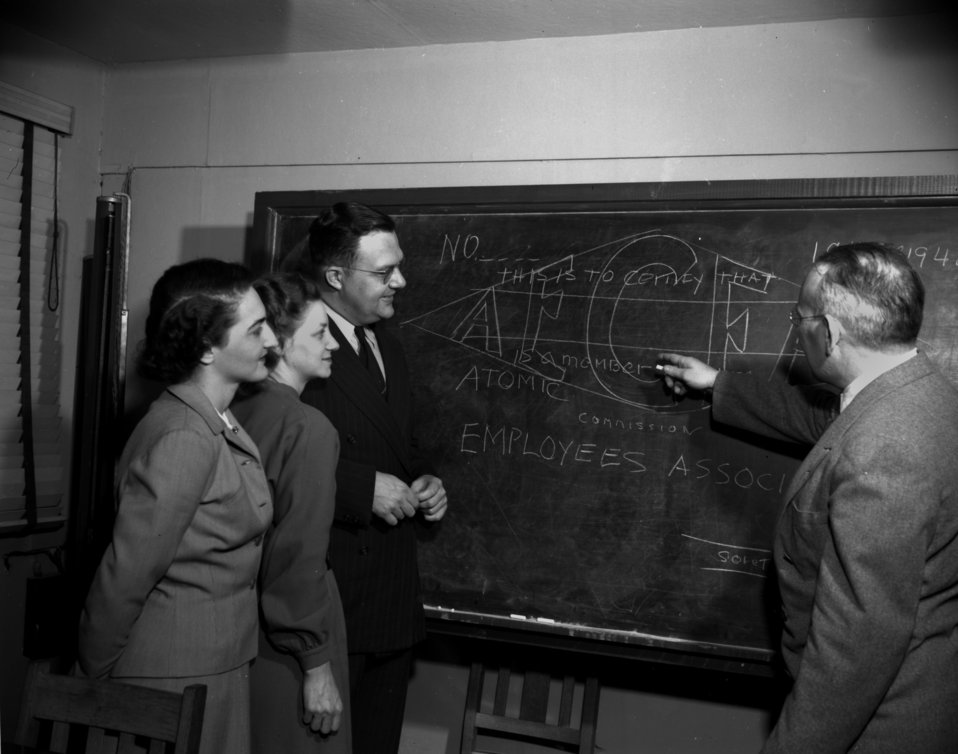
AEC Employee Association

4074-4 DOE photo by Ed Westcott AEC (Atomic Energy Commission) Employee Association